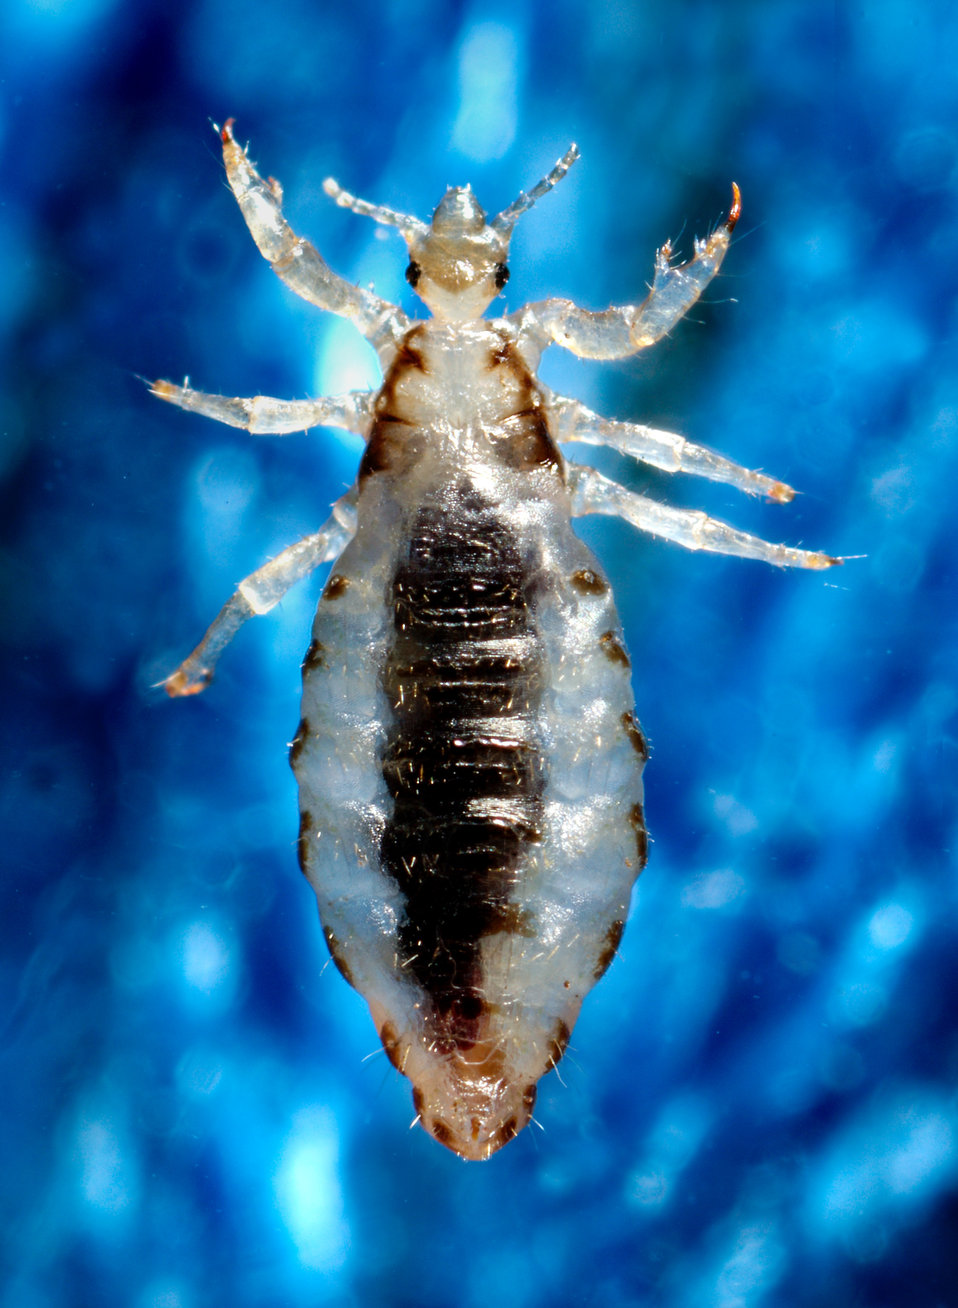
This 2006 photograph depicted a dorsal view of a male body louse, Pediculus humanus var. corporis. Some of the external morphologic features displayed by members of the genus Pediculus include an elongated abdominal region without any processes, and three pairs of legs, all equal in length and width. The distal tip of the male's abdomen is rounded, whereas, the female's (PHIL# 9202) is concave.Body lice are parasitic insects that live on the body, and in the clothing or bedding of infested humans. Infestation is common, found worldwide, and affects people of all races. Body lice infestations spread rapidly under crowded conditions where hygiene is poor, and there is frequent contact among people. Note the sensorial setae, or hairs that cover the louse's body, which pick up, and transmit information to the insect about changes in its environment such as temperature, and chemical queues. The dark mass inside the abdomen is a previously ingested blood meal.